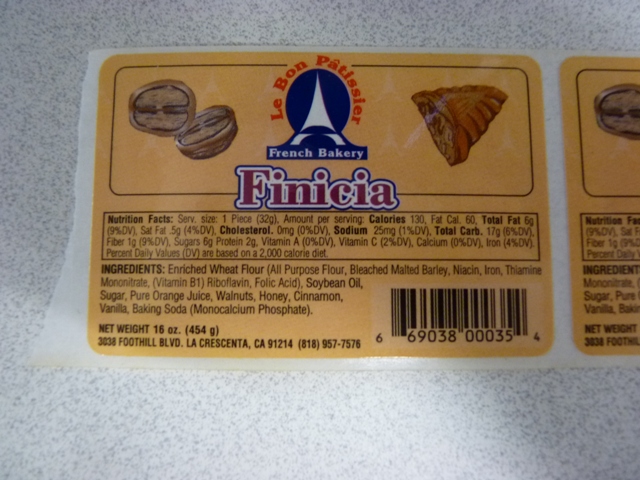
RECALLED - Pastry Products

April 5, 2011 – Product Recall – Le Bon Patissiere-2, Inc. Announces Voluntary Recall

On Select Le Bon Patissiere Products That Contain Undeclared Allergens. For additional information, please refer to the company issued press release available on FDA’s web

site at www.fda.gov/Safety/Recalls/ucm250211.htm